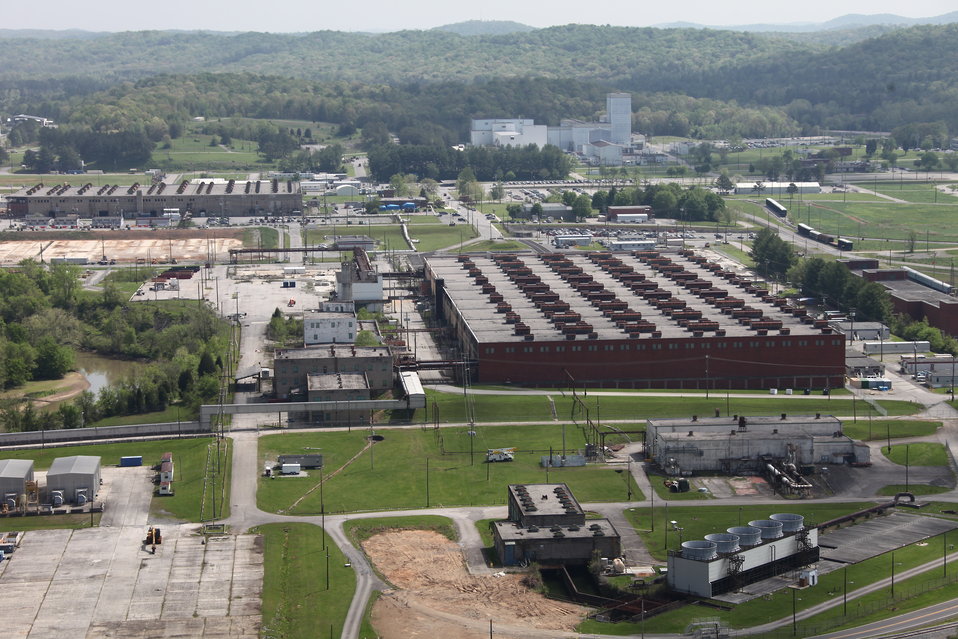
ETTP